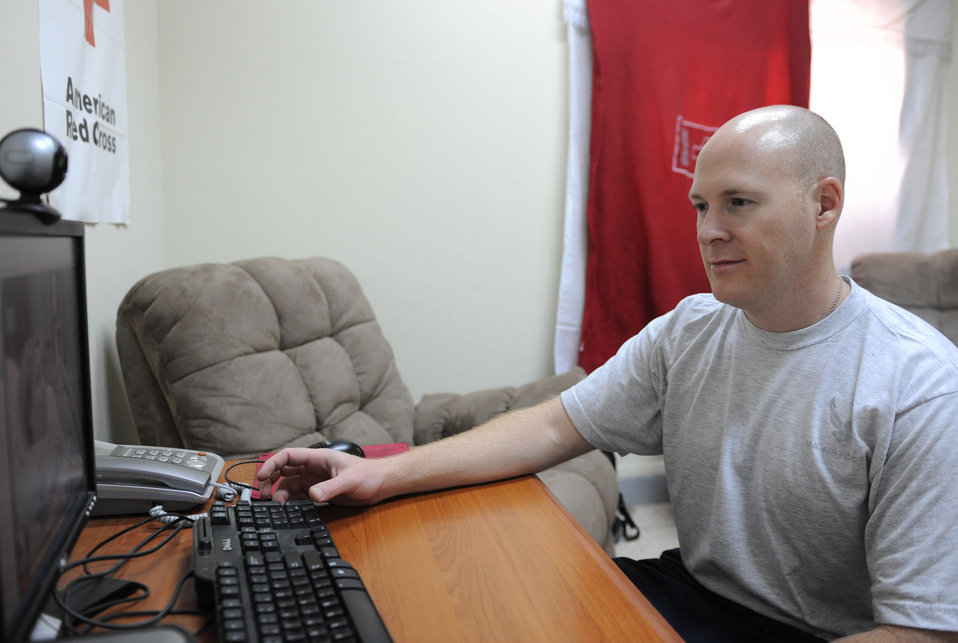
Deployed Airman watches daughter's birth

Tech. Sgt. Nathanael Farrington talks to his wife, Kristen, via Web cam June 17 from Joint Base Balad, Iraq. Sergeant Farrington watched his wife give birth to their third child, Madison. A native of Scottsdale, Ariz., Sergeant Farrington is a 332nd Expeditionary Operations Support Squadron weather forecaster and is deployed from Offutt Air Force Base, Neb.